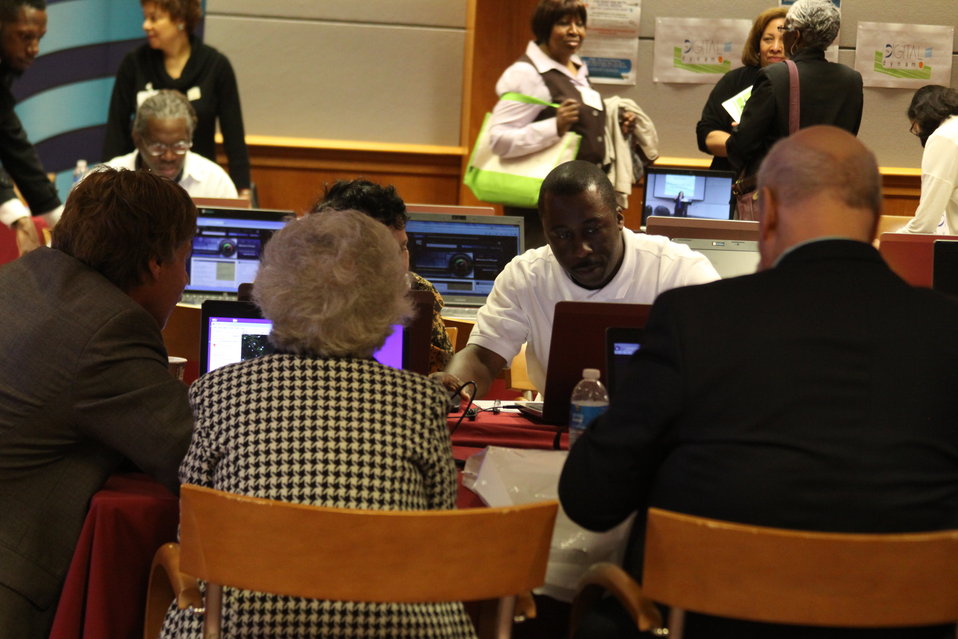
Digital Literacy for Seniors: How the Internet Can Benefit Older Americans, April 24, 2013